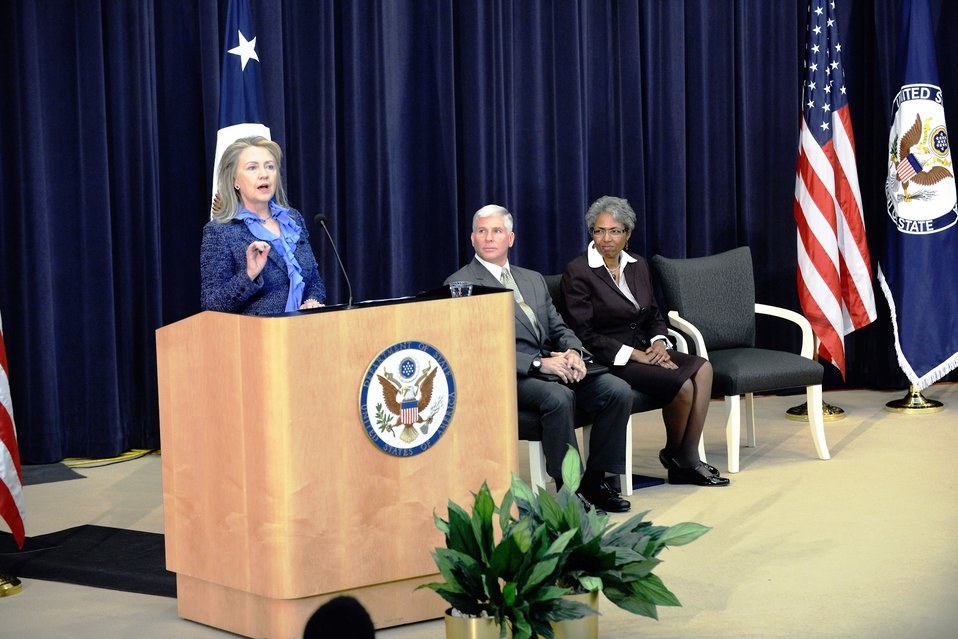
Secretary Clinton Delivers Remarks at the Bureau of Administration’s 2012 Annual Awards Ceremony

U.S. Secretary of State Hillary Rodham Clinton delivers remarks at the Bureau of Administration’s 2012 Annual Awards Ceremony at the U.S. Department of State in Washington, D.C., October 23, 2012.